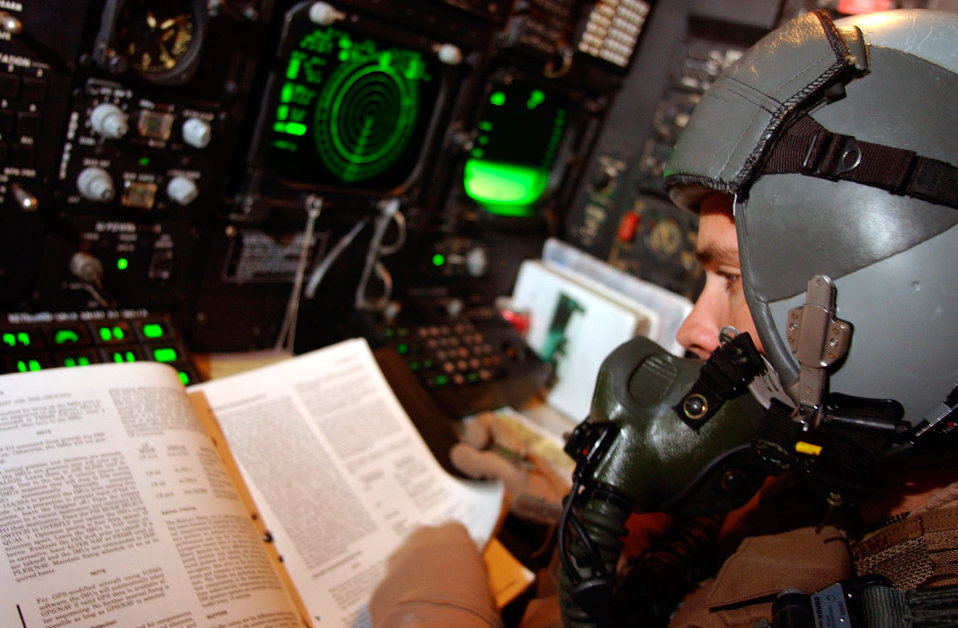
Bomb nav

OPERATION IRAQI FREEDOM -- A 40th Expeditionary Bomb Squadron navigator references a technical order during a B-52 bombing mission in Iraq, April 11. Operation Iraqi Freedom is the multinational coalition effort to liberate the Iraqi people, eliminate Iraqi's weapons of mass destruction, and end the regime of Saddam Hussein.